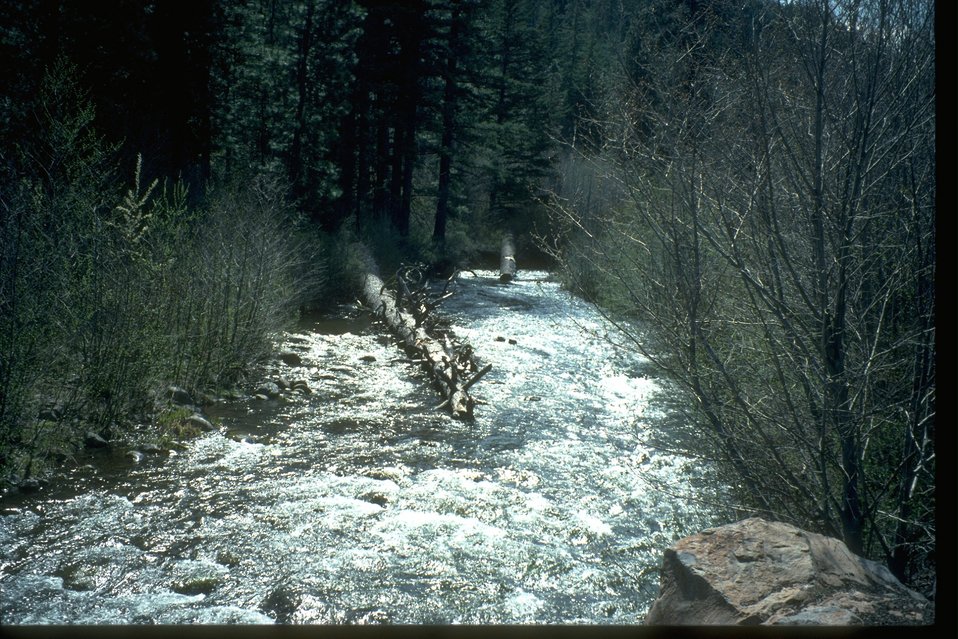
Mountain stream properly functioning at Blewett Pass, WA.